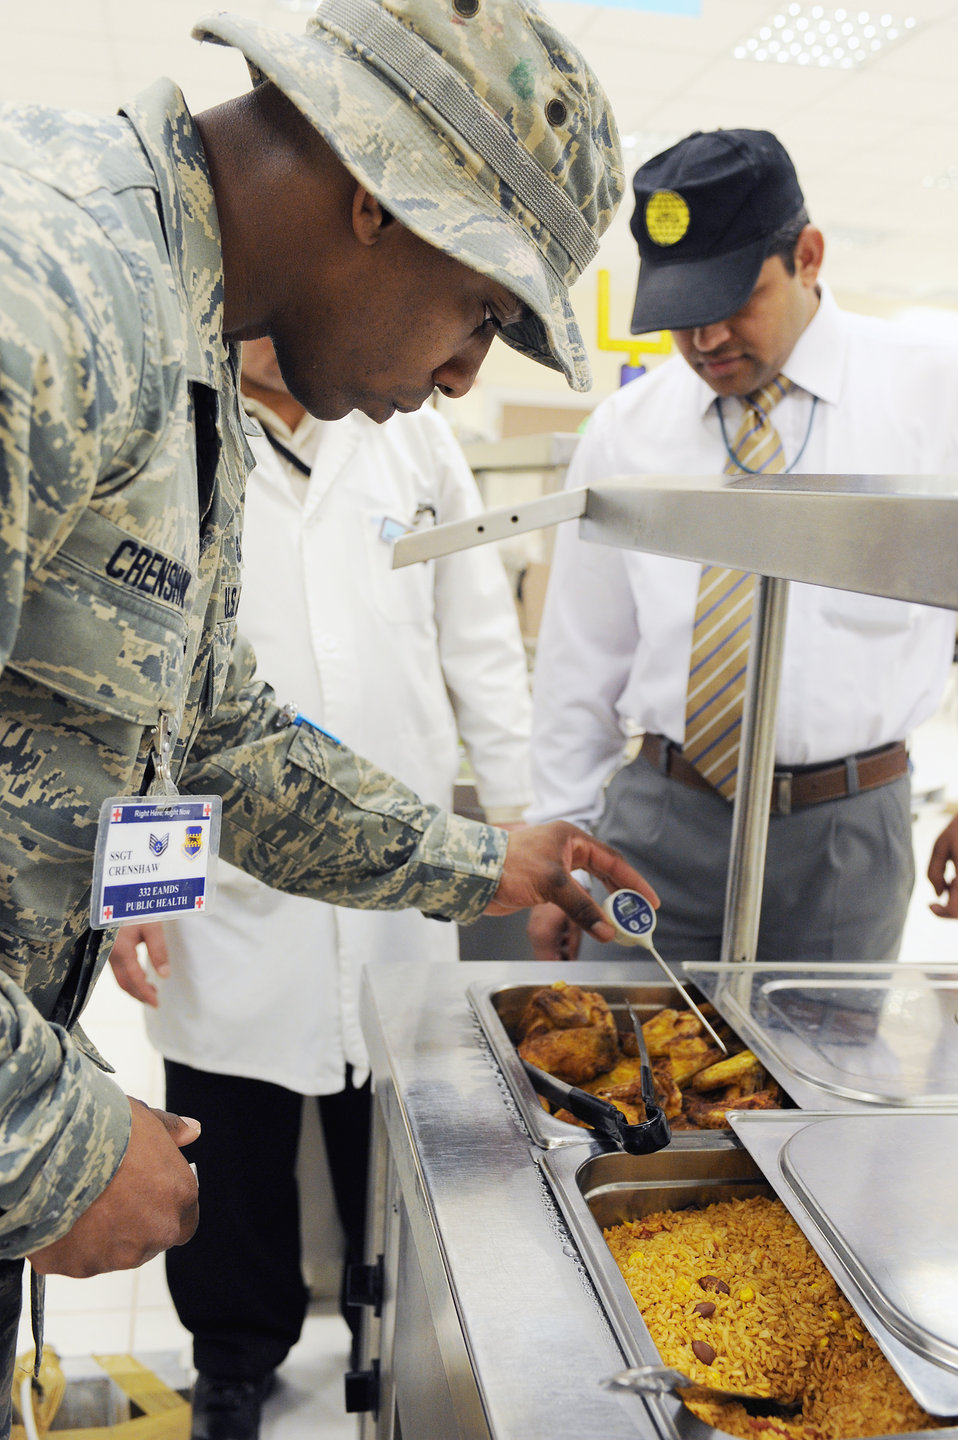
Airmen keep servicemembers healthy through preventative measures

Staff Sgt. William Crenshaw checks the temperature of the chicken being served in the grab-and-go line during an inspection of Dining Facility Two March 23, 2010, at Joint Base Balad, Iraq. Sergeant Crenshaw is the 332nd Aerospace Medical Squadron public health noncommissioned officer in charge. He is deployed from Lackland Air Force Base, Texas.